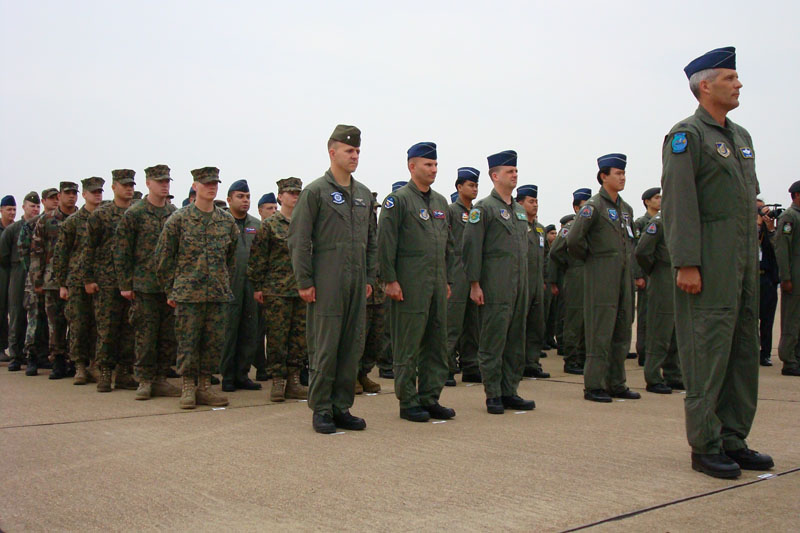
Cope Tiger wraps up in Thailand

Col. James Horton, 13th Air Expeditionary Wing commander for Exercise Cope Tiger 2008, stands at attention in front of a formation of Airmen and Marines at the exercise's official closing ceremony here Feb. 5. The Royal Thai Air Force and the Republic of Singapore Air Force participated in the 13th annual multilateral exercise with the U.S. Air Force and the Marines from Jan. 26 to Feb. 5.